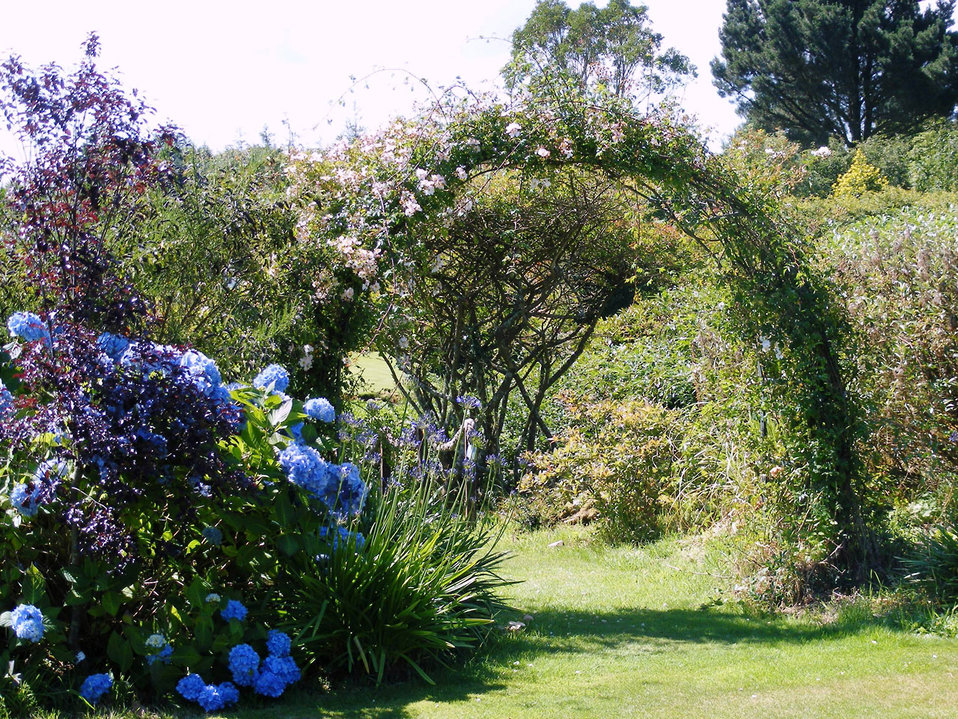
Rose arch

A rose arch and surrounding flora.